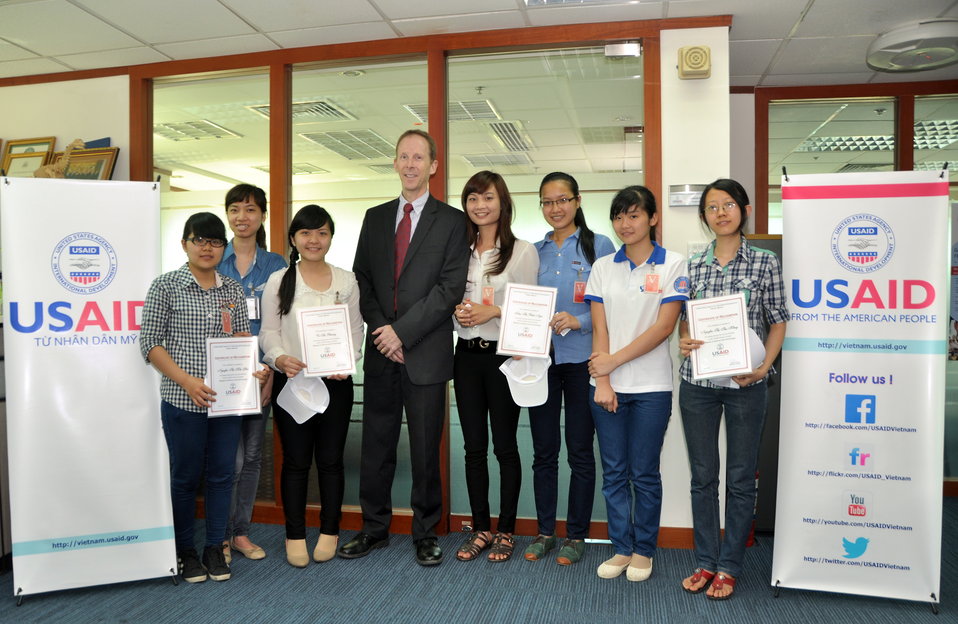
Women in Science and Technology Essay Contest Award Ceremony

USAID Mission Director awards certificates to top ten finalists in Hanoi. May 16, 2013.